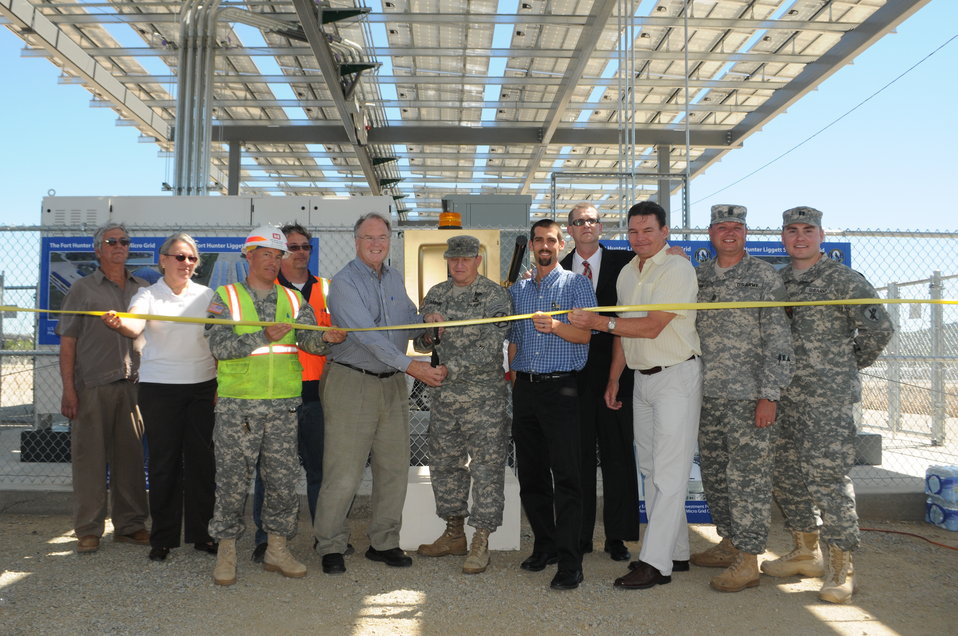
Ribbon cutting for new solar microgrid at Fort Hunter Liggett

U.S. Rep. Sam Farr (fifth from left) joined Fort Hunter Liggett garrison commander, U.S. Army Col. James Suriano (center); Maj. Thomas Giannini (third from left), a civil engineer with the U.S. Army Corps of Engineers Sacramento District; Capt. Ross Renken (right), a project manager with the Sacramento District; and others in officially opening the new one megawatt solar microgrid during a ribbon-cutting ceremony at Fort Hunter Liggett, Calif., April 20, 2012. The Sacramento District oversaw construction of the $8.4 million project, one of six pilot installations selected by the U.S. Army to be net-zero energy.